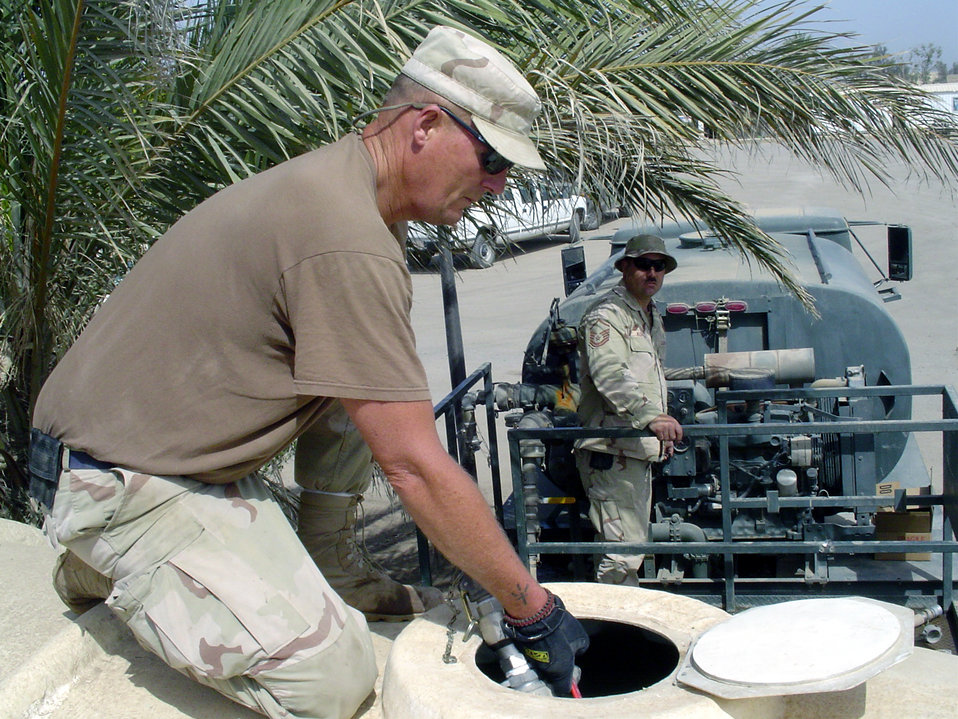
Airmen keep water flowing

BAGHDAD, Iraq -- Staff Sgt. Brent Blankenship fills a water reservoir while Master Sgt. Bill Kopfman runs the pump on a portable water tanker. Both Airmen are assigned to the 447th Expeditionary Civil Engineer Squadron here.